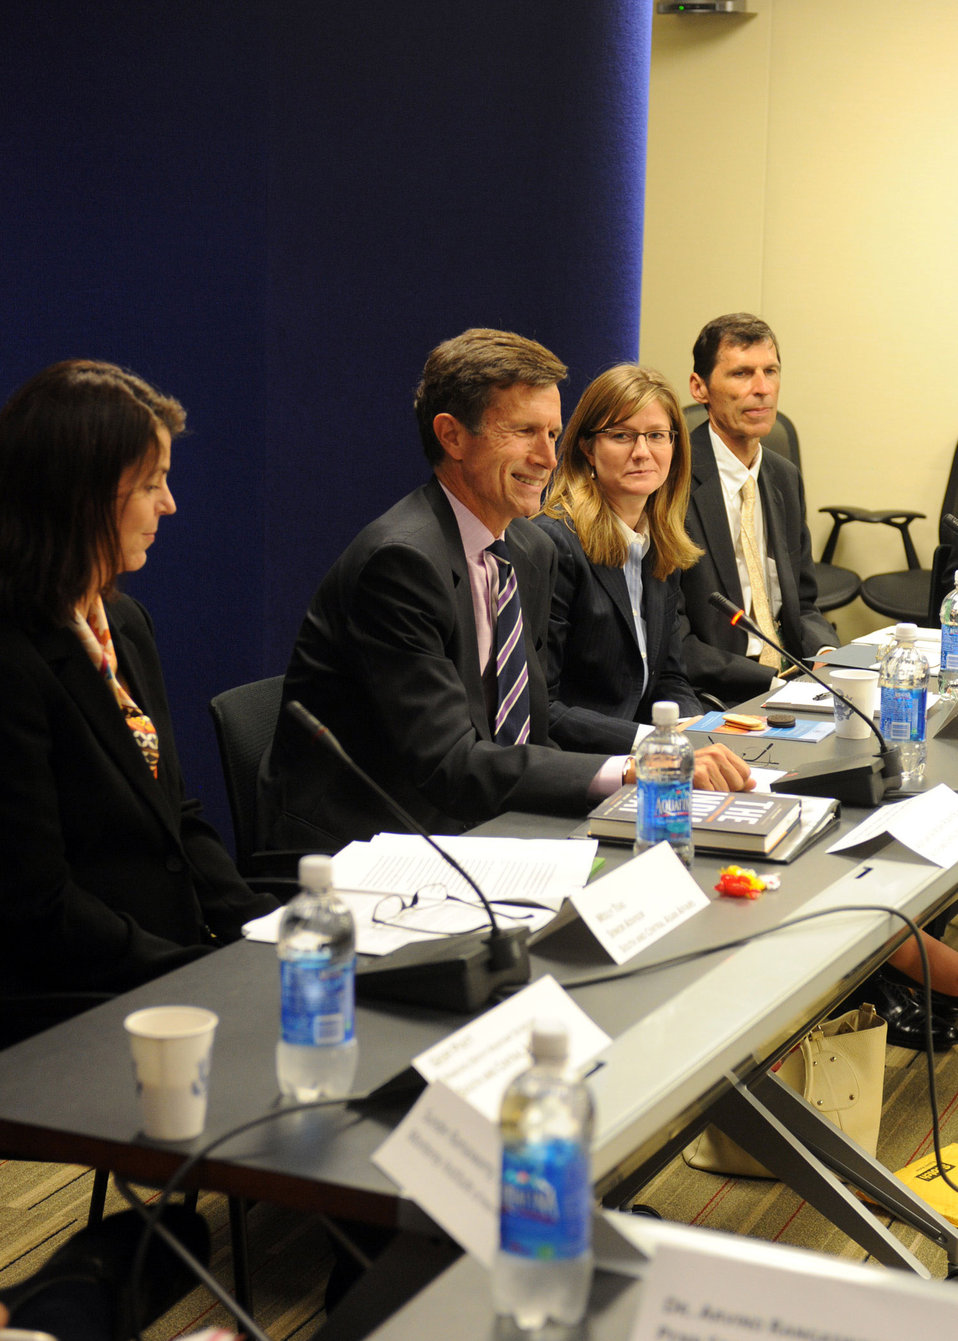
Assistant Secretary Blake and Senior Advisor for Education Dr. Teas Chair the Higher Education Roundtable

Assistant Secretary of State for South and Central Asian Affairs Robert O. Blake (second from left) and Senior Advisor for Education Dr. Molly Maguire Teas (third from left) for South and Central Asian Affairs chair the Higher Education Roundtable in Washington, D.C., on September 16, 2010.